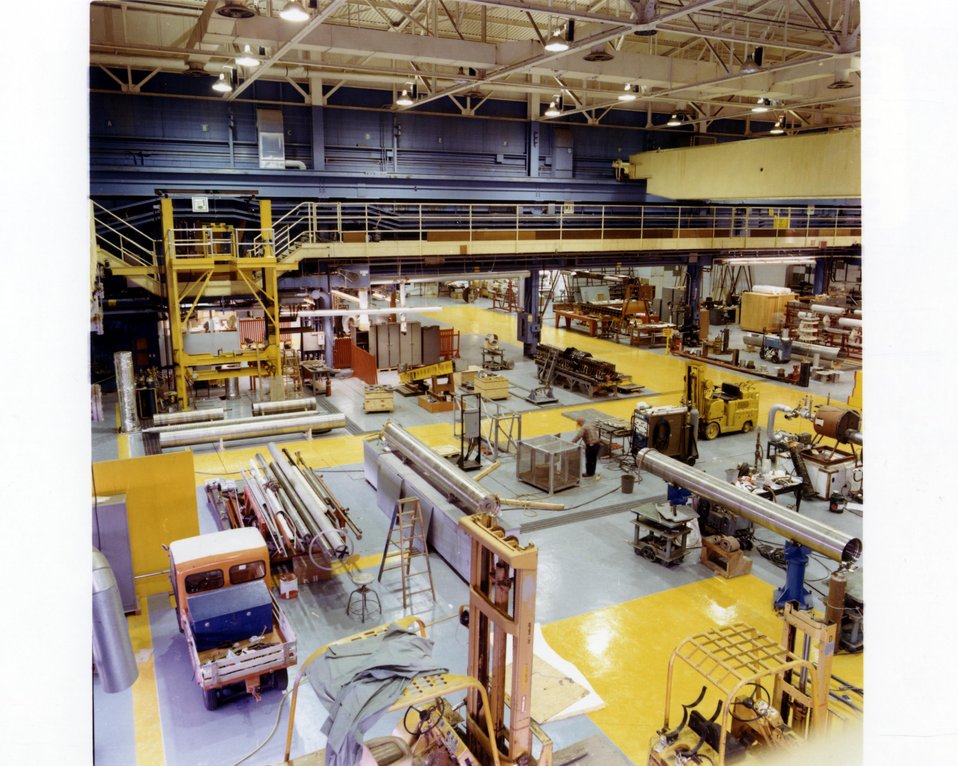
CBA IS A PROTON-PROTON COLLIDING BEAM ACCELERATOR WHICH IS BEING BUILT TO STUDY THE BASIC STRUCTURE OF ENERGY AND MATTER. THE FACILITY ITSELF IS AN UNDERGROUND CIRCULAR TUNNEL, WHICH IS 3.8 KILOMETERS IN CIRCUMFERENCE. TWO RINGS OF SUPERCONDUCTING MAGNETS WILL BE INSIDE THE TUNNEL. PRO- TON BEAMS WILL BE INJECTED INTO THE TUNNEL AND ACCELERATED TO ENERGIES UP TO 400 GEV. AT SIX PLACES ALONG THE TUNNEL, THE BEAMS WILL COLLIDE. EXPERIMENTAL HALLS, WHICH ENCLOSE THESE 6 INTERSECTIONS, WILL HOUSE EQUIPMENT FOR STUDYING THE RESULTS OF THE COLLISIONS.